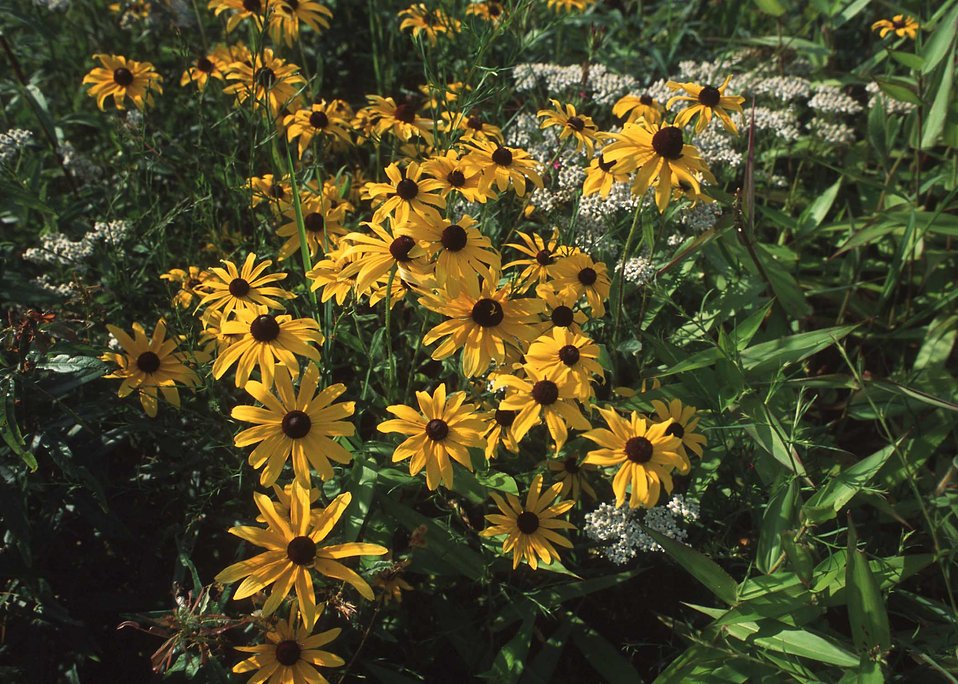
Black-eyed Susan flowers in an early successional habitat restoration project in Hartford County.